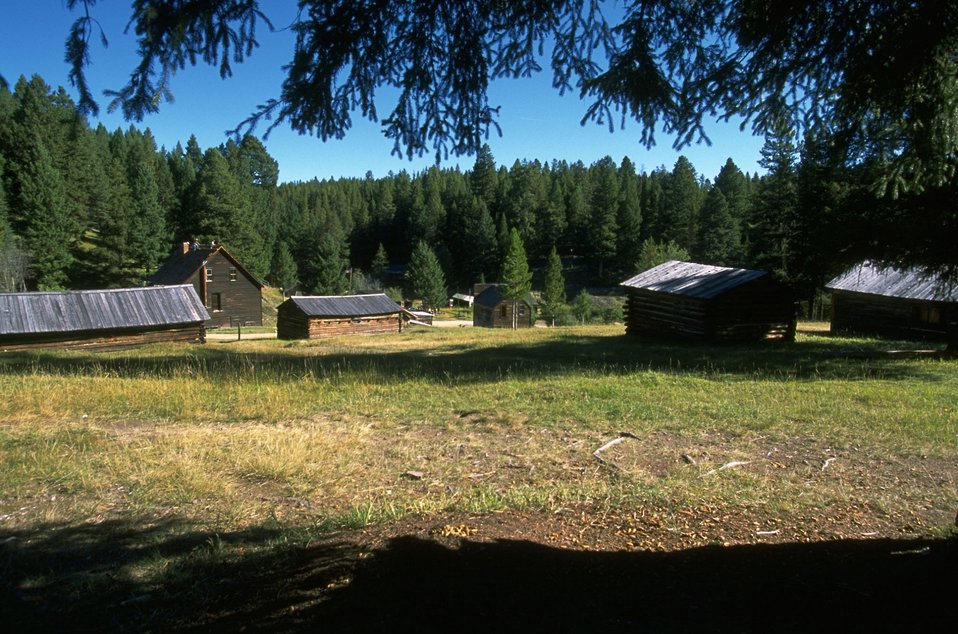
Garnet Ghost Town residential cabins